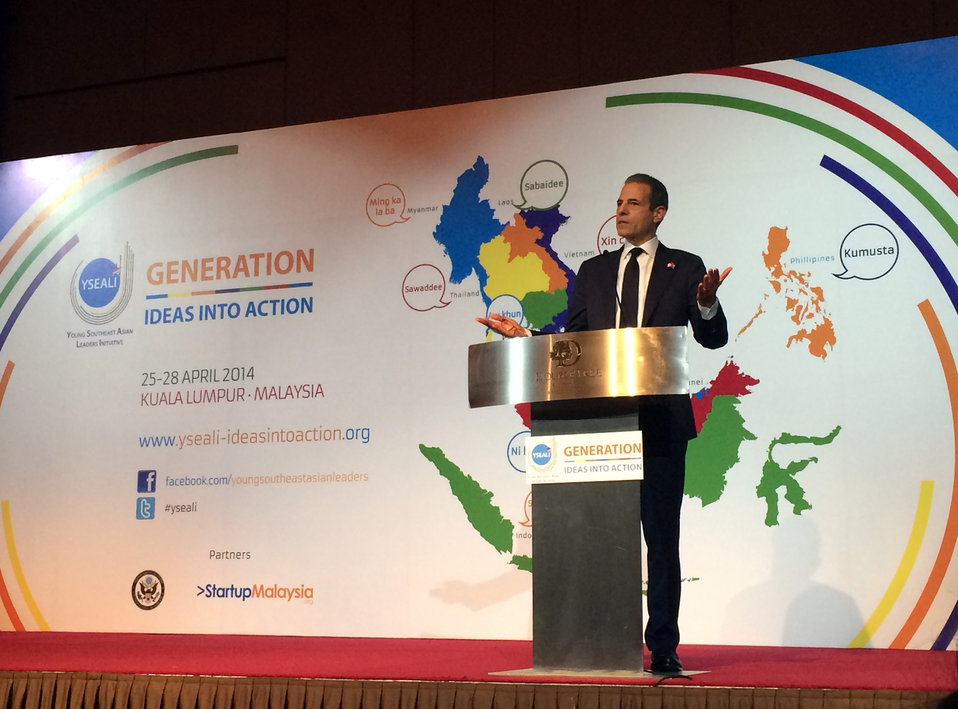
Under Secretary Stengel Delivers the Keynote Address at the 'YSEALI Generation – Ideas into Action' Workshop

Under Secretary for Public Diplomacy and Public Affairs Rick Stengel delivers the keynote address at the Young Southeast Asian Leaders Initiative – 'YSEALI Generation – Ideas into Action' workshop and speaks to over 100 U.S. Government exchange alumni nominated to attend the workshop by U.S. embassies from 10 ASEAN countries, in Kuala Lumpur, Malaysia, on April 25, 2014.